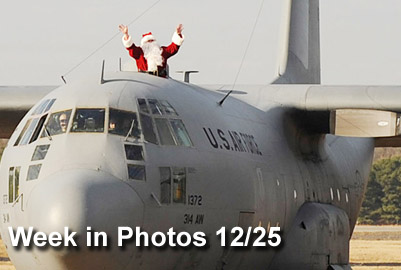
Week in Photos 12/25

Air Force Week in Photos for Dec. 25 highlights photos from around the Air Force. In this photo Santa Claus waves from a C-130 Hercules as it taxis along the flightline at Little Rock Air Force Base, Ark., Dec. 18, 2009. Santa, aka Lt. Col. Lance Avery, made the early visit to the base for the 62nd Airlift Squadron children's holiday party.